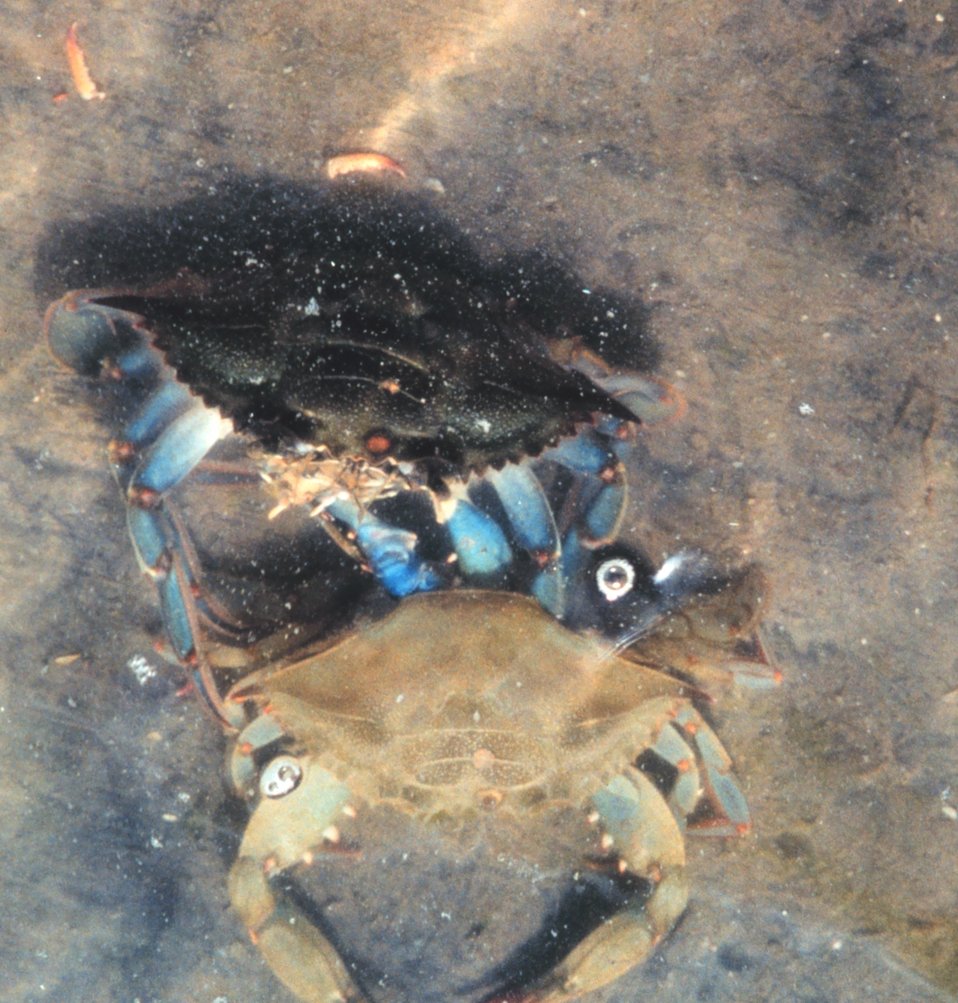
Photo #7 of 8. Having reached the 'buster' molt stage, a Maryland blue crab , Callinectes sapidus, sheds its shell. The genus and species mean tasty beautiful swimmer.